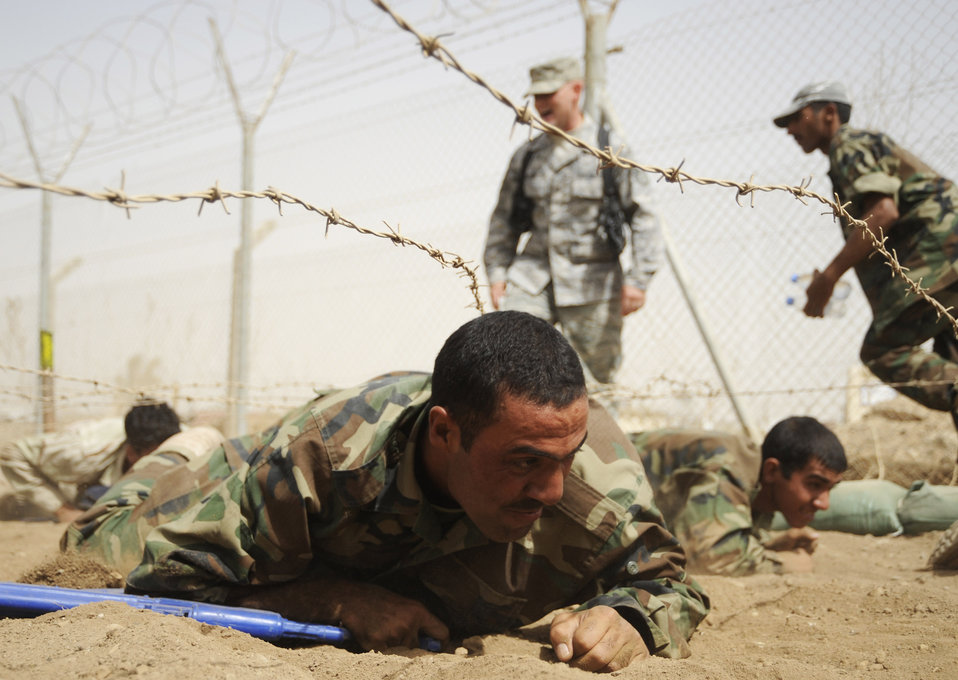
Training instructors build tactical course for Iraqi airmen

An Iraqi air force warrant officer low crawls under barbed wire during his run of the basic military training tactical course while carrying his blue training rifle.